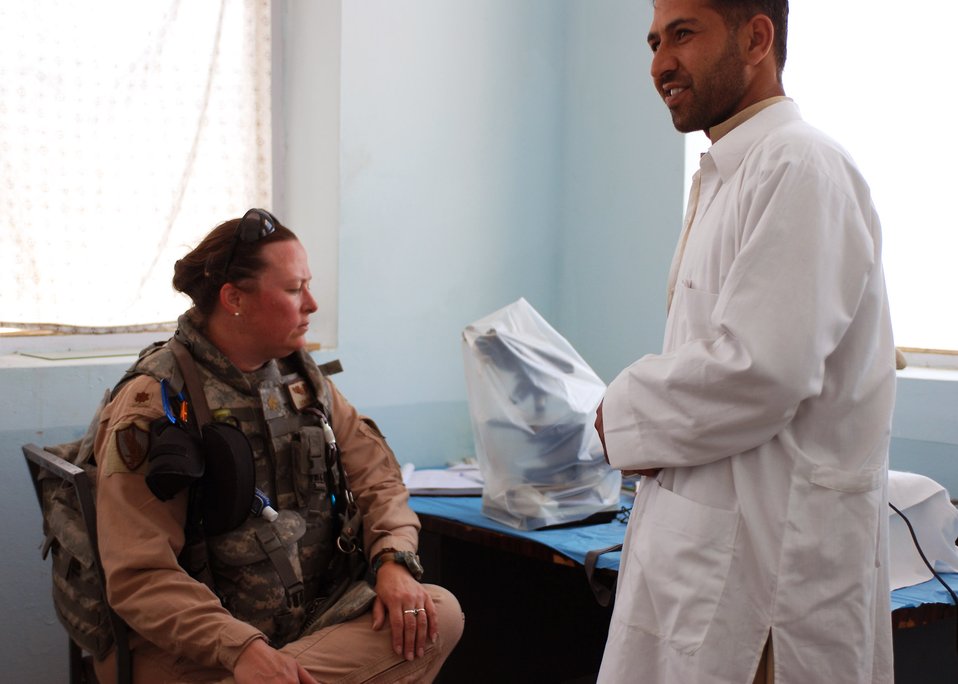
Medical team inspects remote health clinic

Maj. Lena Soto, while inspecting medical equipment at the Jegdalak Medical Health Center in Jegdalak, Afghanistan, discusses issues with a medical technician. Major Soto and her team from Combined Security Transition Command-Afghanistan Command Surgeon's office regularly inspect clinics like the Jegdalak Medical Health Center to guarantee the services meet the needs of the Afghan people.